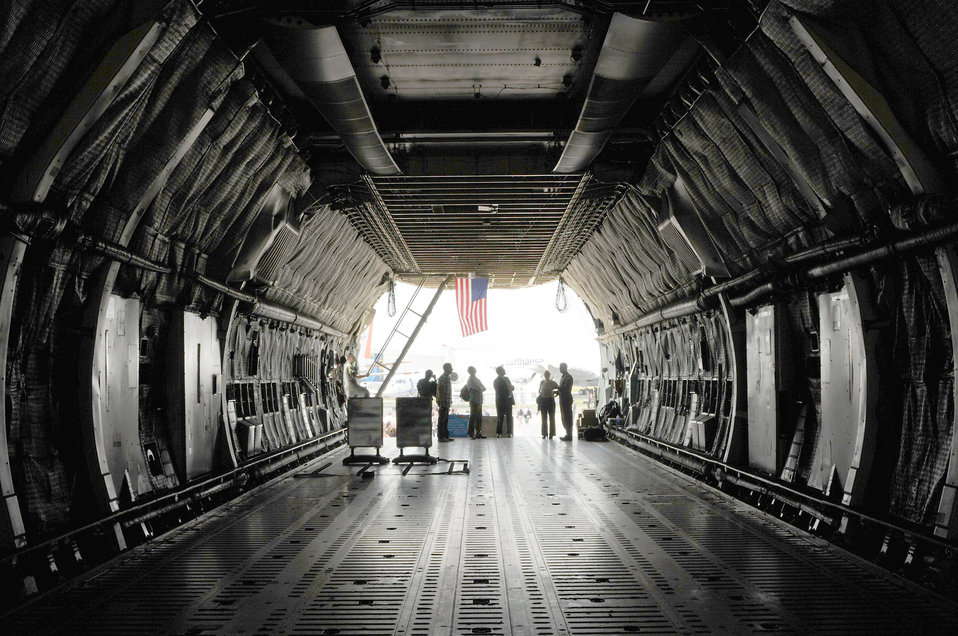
U.S. military participates in Berlin air show

An Airman provides information about the C-5 Galaxy during the 2010 Berlin International Aerospace Exhibition and Conferences Air Show June 8, 2010, at Berlin-Schoenefeld Airport in Berlin. Approximately 90 military aircrew and support members from bases in Europe and the U.S. are participating in the air show. The Airman is assigned to the with the 9th Airlift Squadron from Dover Air Force Base, Del.